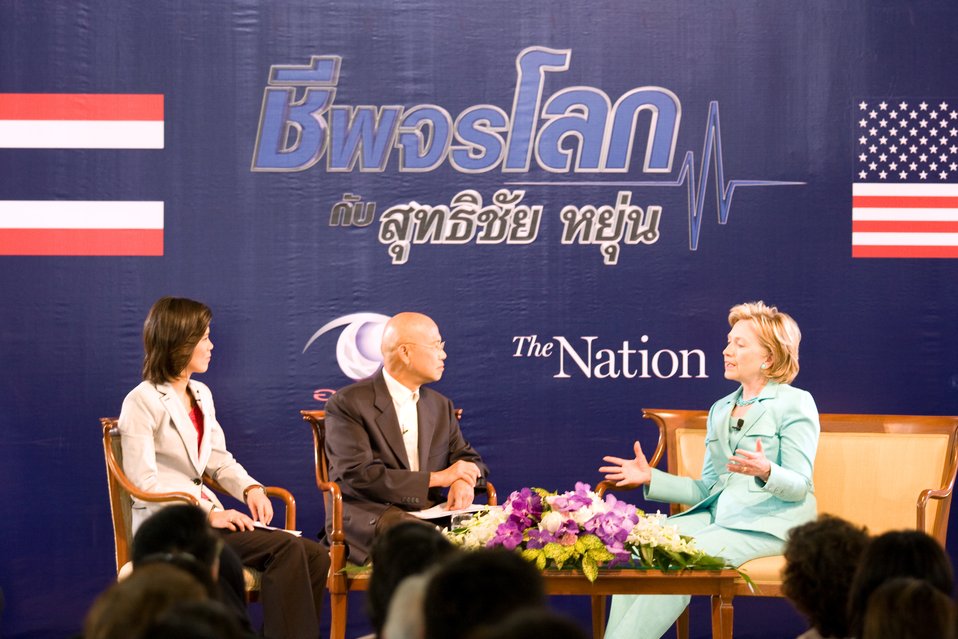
Secretary Clinton Interviews With the Nation Group

U.S. Secretary of State Hillary Rodham Clinton during an interview by Suthichai Yoon and Veenarat Laohapakakul at Phyathai Palace in Bangkok, Thailand July 22, 2009.